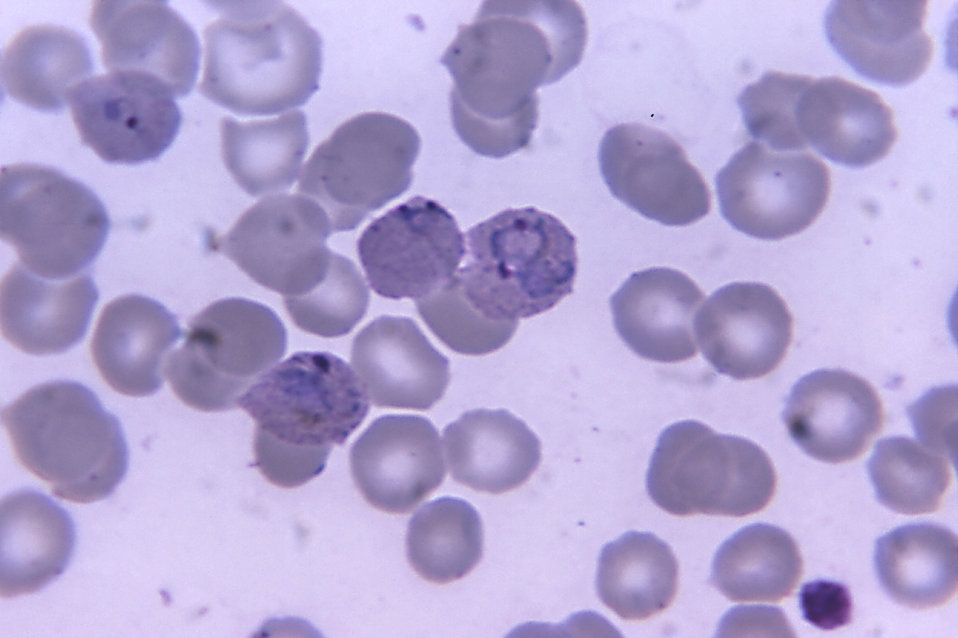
This micrograph depict growing P. vivax trophozoites.